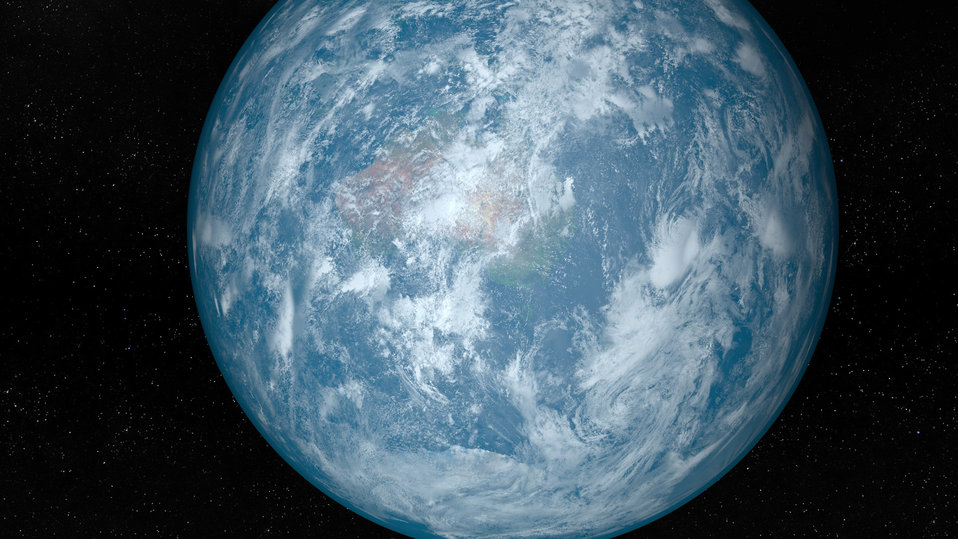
Earth zoom

Earth as seen from space 3d animation.